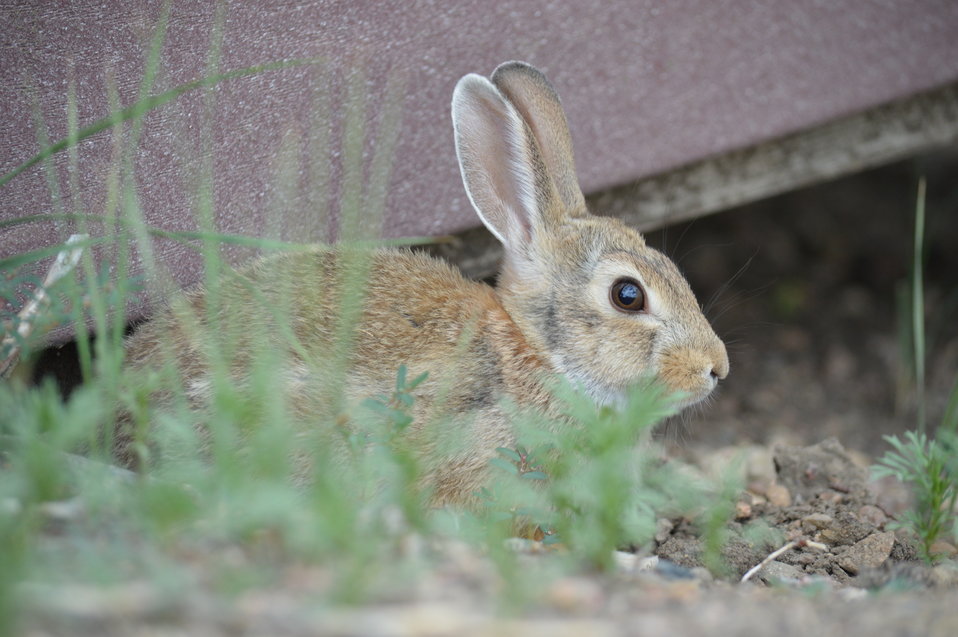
Interns visit the Black-Footed Ferrets

In the summer of 2012, USFWS Region 6 interns visited the National Black-Footed Ferret Conservation Center (NBFFCC) in Wellington, Colorado. First species spotted was a cottontail bunny.